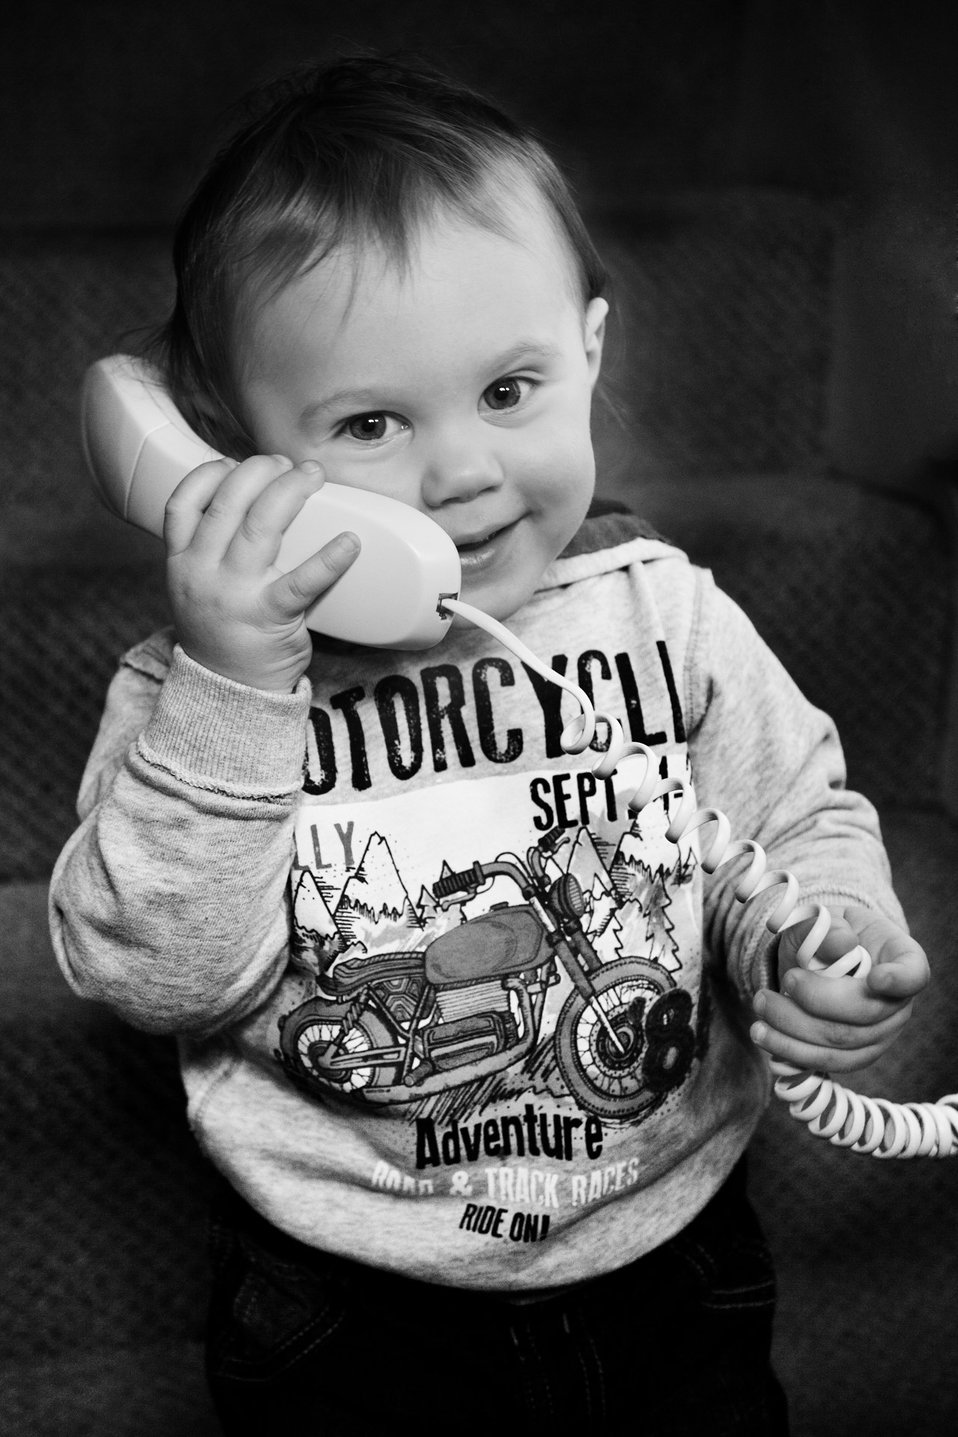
Boy making a phone call

Young baby boy is making a phone call. black and white image.